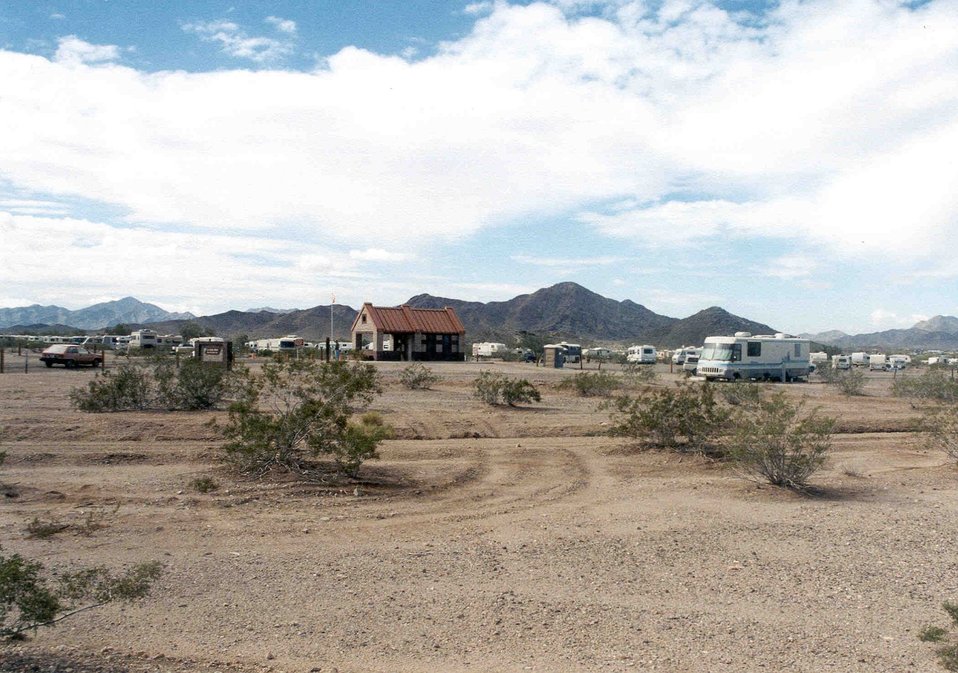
Contact station at La Posa Long Term Visitor Area (LTVA) during the busy winter season.